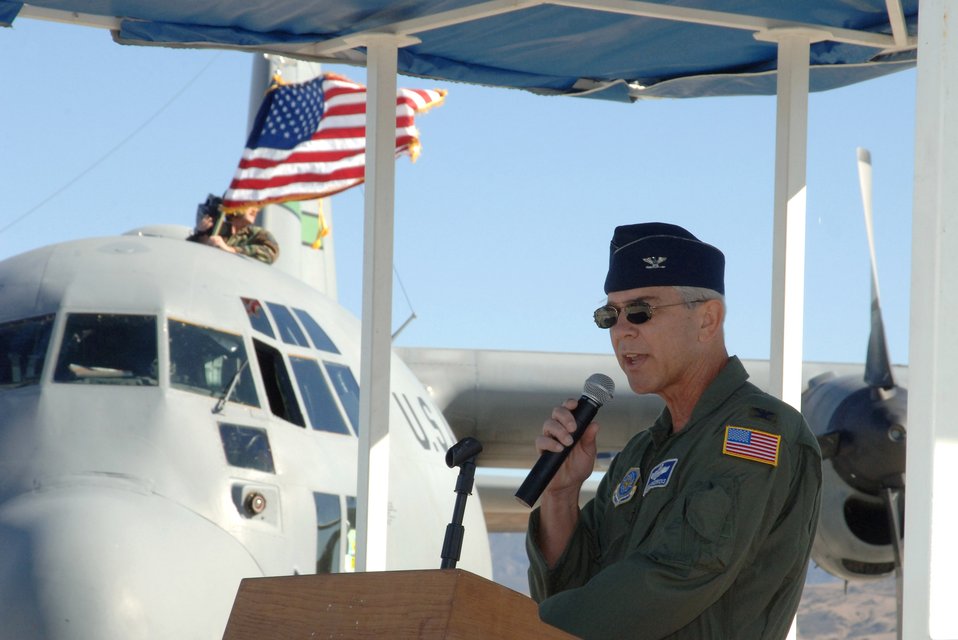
Farewell Hercules

Col. Stephen Friederick speaks to a crowd Dec. 2 gathered on the flightline at Channel Island Air National Guard Station in California. Airmen from the 146th Airlift Wing flew their last two C 130 Hercules for the final time. The aircraft were delivered to the Air Force in the early 1960's and came to the 146th in 1974. They served in many ways including bringing in relief supplies and tranporting injured citizens natural disasters, most recently Huricane Katrina. The wing's C-130s were also capable of delivering fire retardant to help fight wildfires. Colonel Friederick is the 146th AW commander.